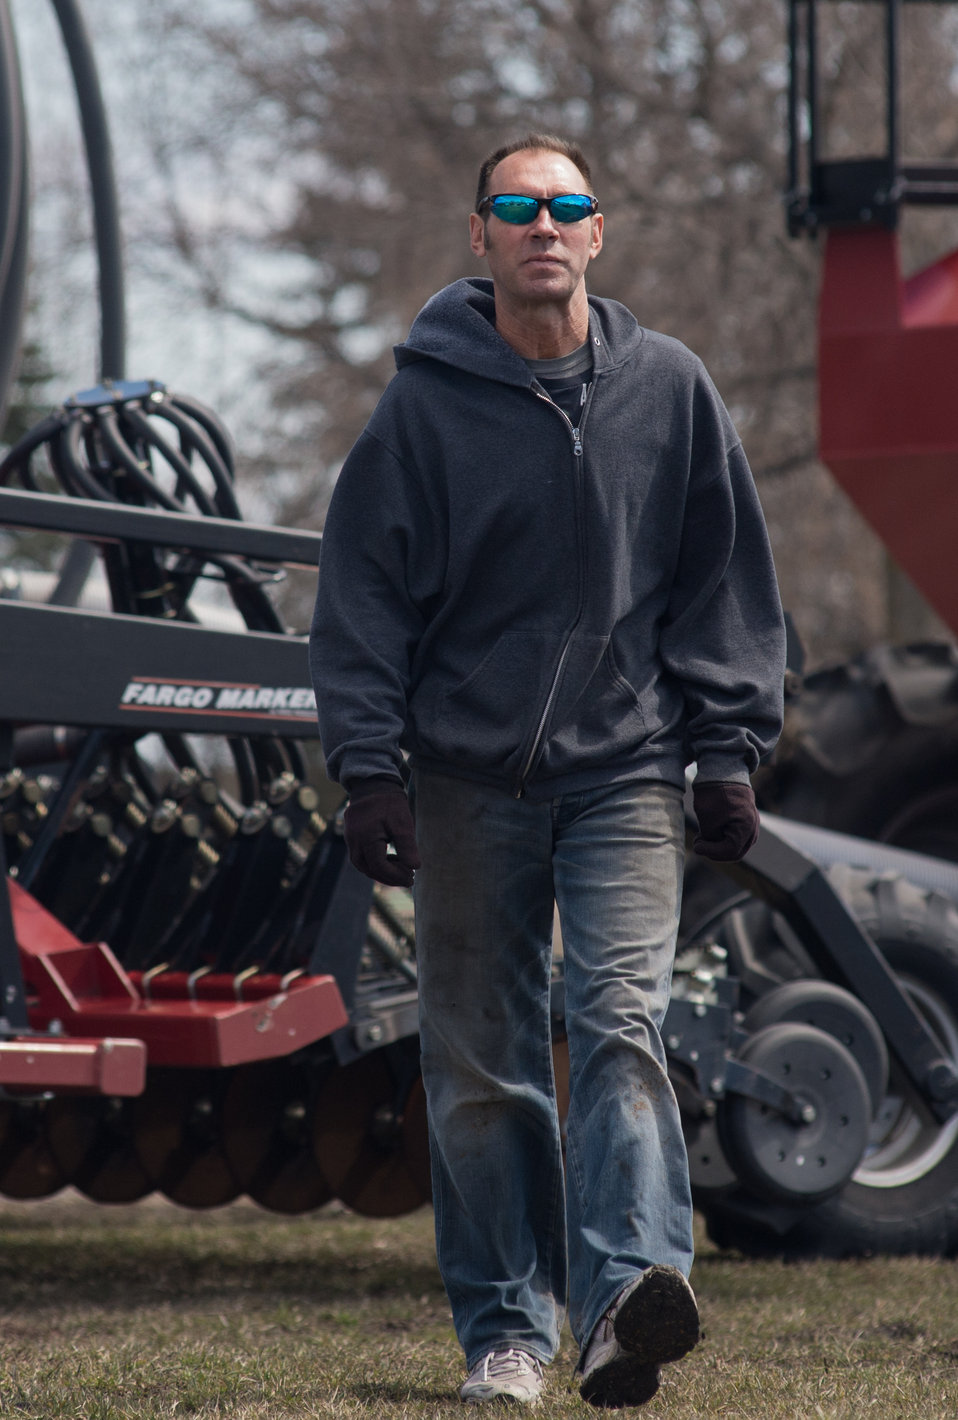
Jeff Hoff checks the farm equipment at his farmstead in Perley, MN, on Tuesday, April 30, 2013. With the assistance of the U.S. Department of Agriculture (USDA), he was able to build up and modify an earthen dike that is currently holding back flood waters around his home, structures and farm equipment. To learn about the USDA Red River Basin Initiative, see www.mn.nrcs.usda.gov/news/features13/RRBI.html.